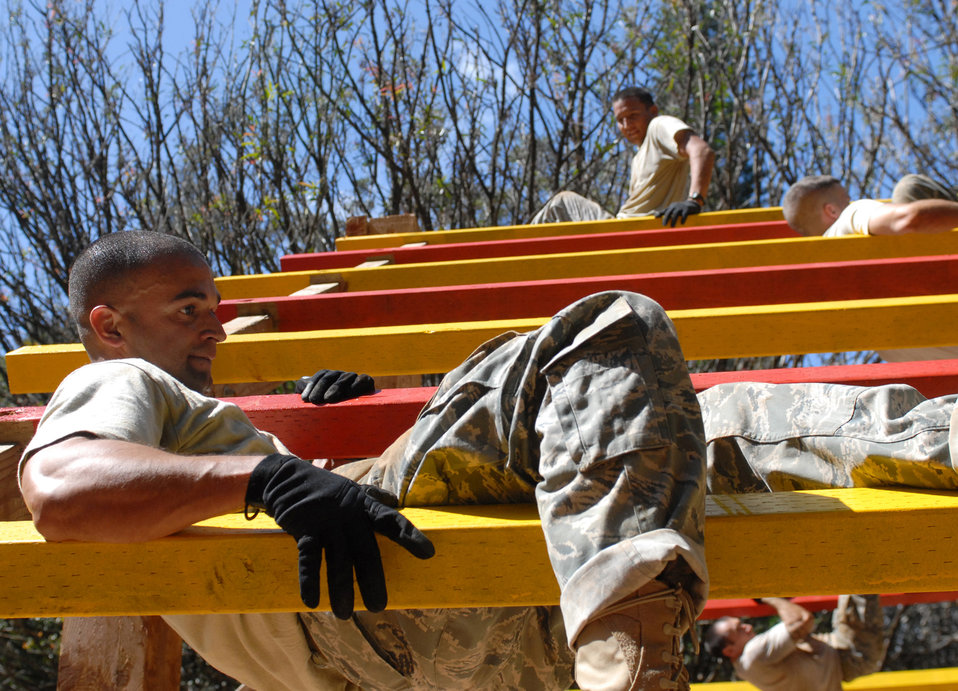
Airmen vie for slots in Army Air Assault course

Tech. Sgt. Pablo Gonzalez completes the final obstacle in a course during try-outs for the Army Air Assault Course Feb. 1, 2011, in Wahiawa, Hawaii. Sergeant Gonzalez and 15 other security forces members from Joint Base Pearl Harbor-Hickam, Hawaii, are scheduled to attend the two-week Air Assault Course beginning May 5, 2011. Sergeant Gonzalez is assigned to the 647th Security Forces Squadron.